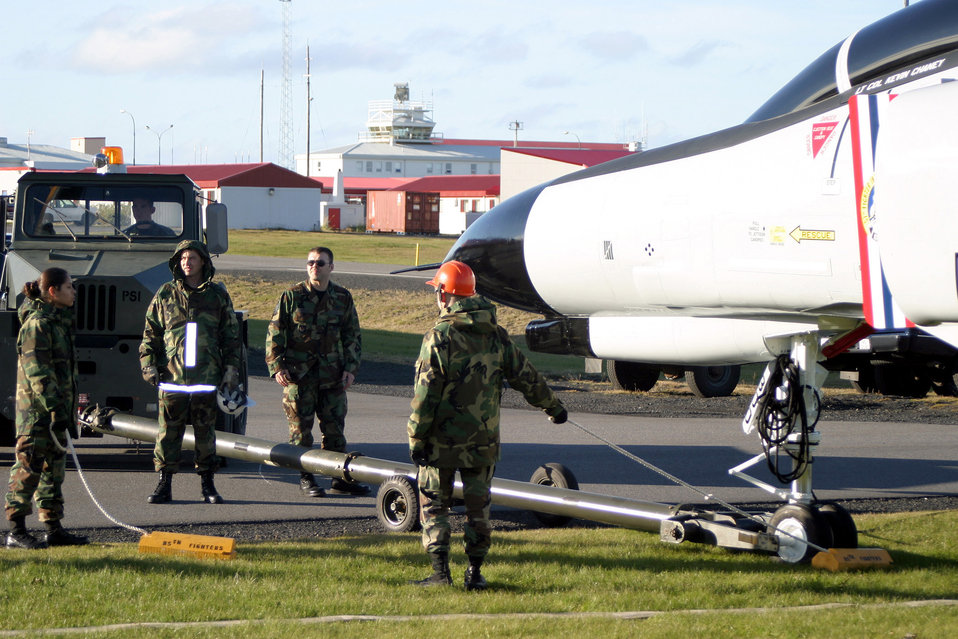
Airmen restore piece of history

NAVAL AIR STATION KEFLAV√çK, Iceland -- Airmen from the 85th Group here remove the tow bar connected to an F-4 Phantom. The aircraft, which has been on display since the early 1990s, was removed from its pedestal in 2002 because of extensive corrosion. It was restored and put on display in front of the command building.